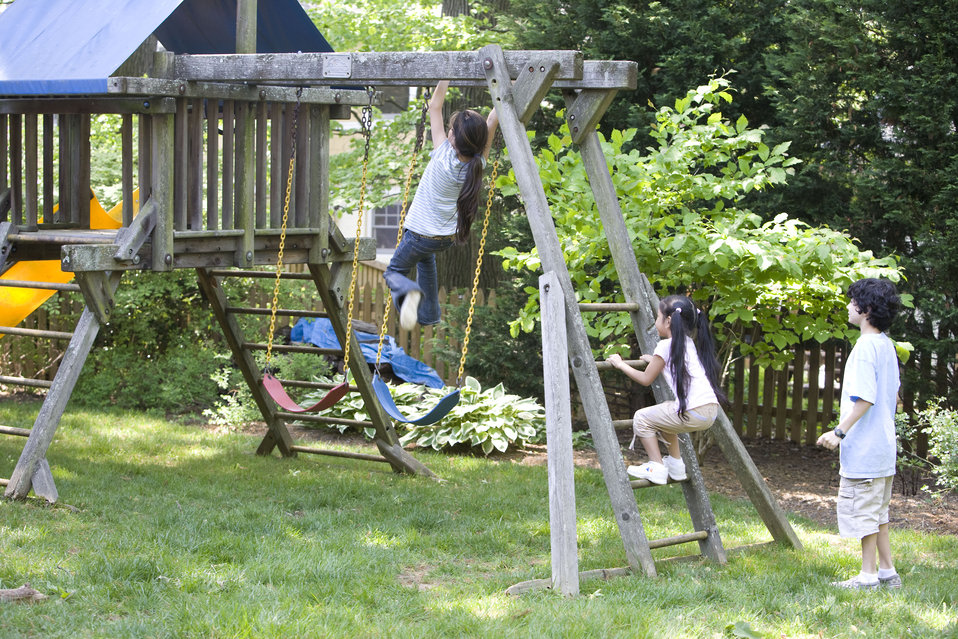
Children love playing outside, and these children were thoroughly enjoying their wooden swing set, and all were having fun in the fresh outdoor air, and the beautiful weather. It's important to note that older wooden playsets may have been treated with arsenic and/or creosote, and therefore, parents need to know if these chemicals were used in their manufacture.